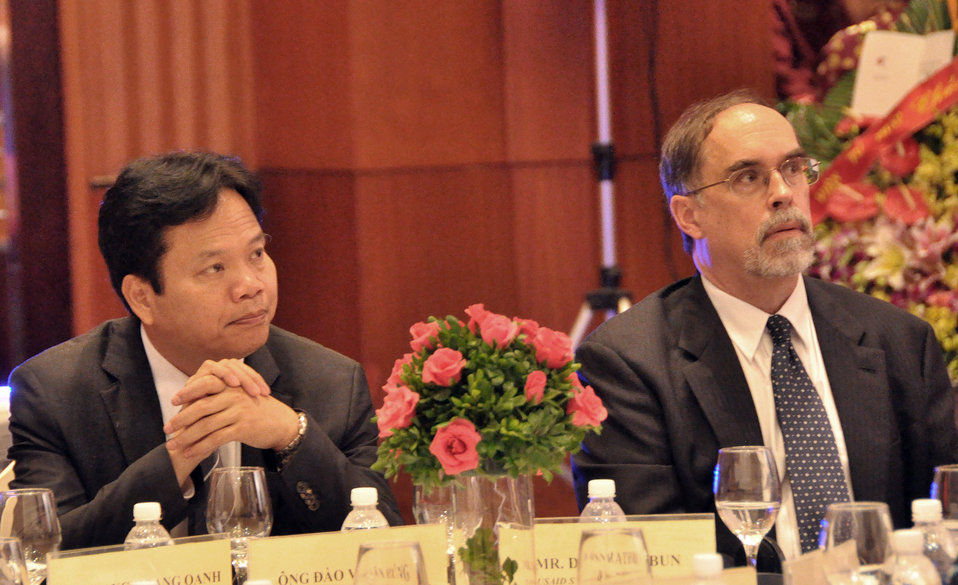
USAID's Support for Trade Acceleration Project (USAID STAR Plus) Closing Ceremony

Hanoi, August 26, 2013.